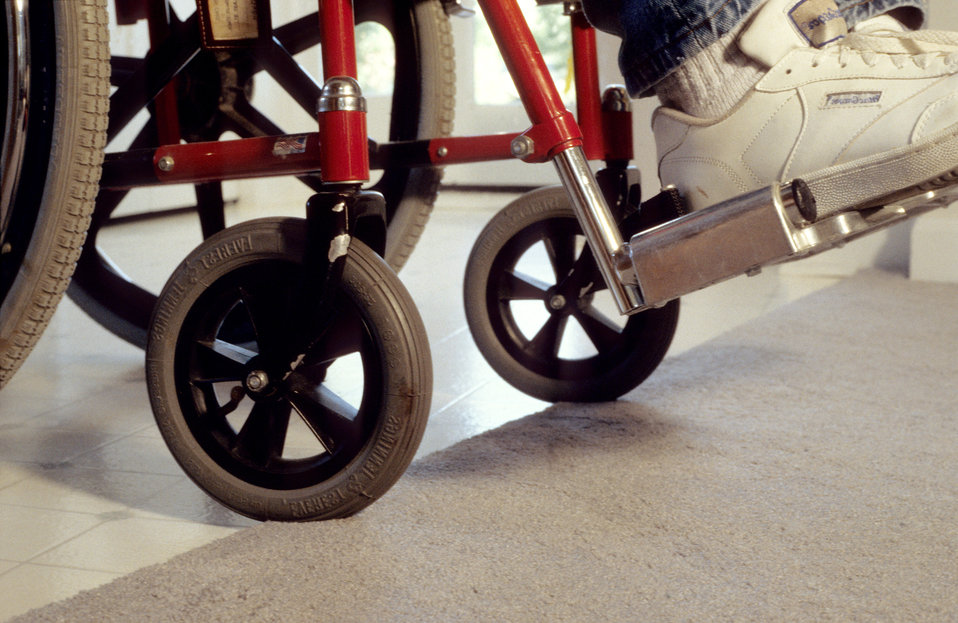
This 1997 image was one of three (see PHIL# 9263 - 9265) the theme of which focused on the areas of a residential environment where one would encounter transitional changes in floor surface levels. When floor designs implement a minimization in floor height at transition points, unimpeded travel is facilitated for those using wheelchairs, or experiencing abulatory difficulties. In this particular image, the rubbery, inflateable wheels of a wheelchair easily navigated the transitional point between a tiled versus carpeted floor surface.